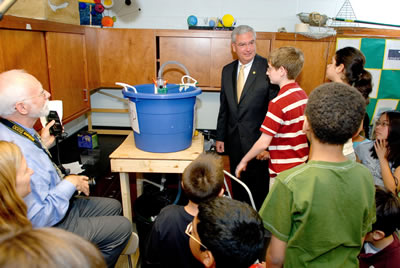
Environmental stewardship lesson

April, 2007. Administrator Stephen Johnson teaches environmental stewardship to Roberto Clemente Middle School Students.